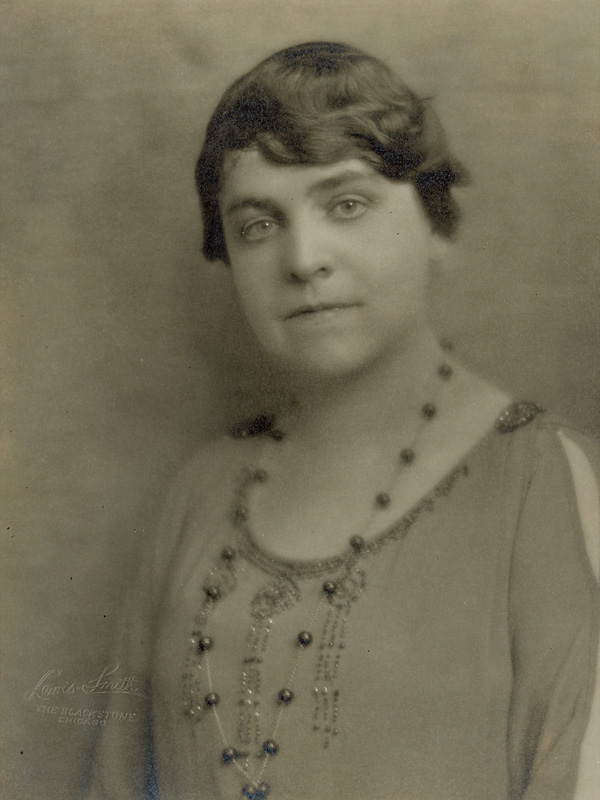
Nellie V. Walker (1874-1973) - Women Artists

Sculptor, Bronze statue of James Harlan of Iowa for the National Statuary Hall Collection.